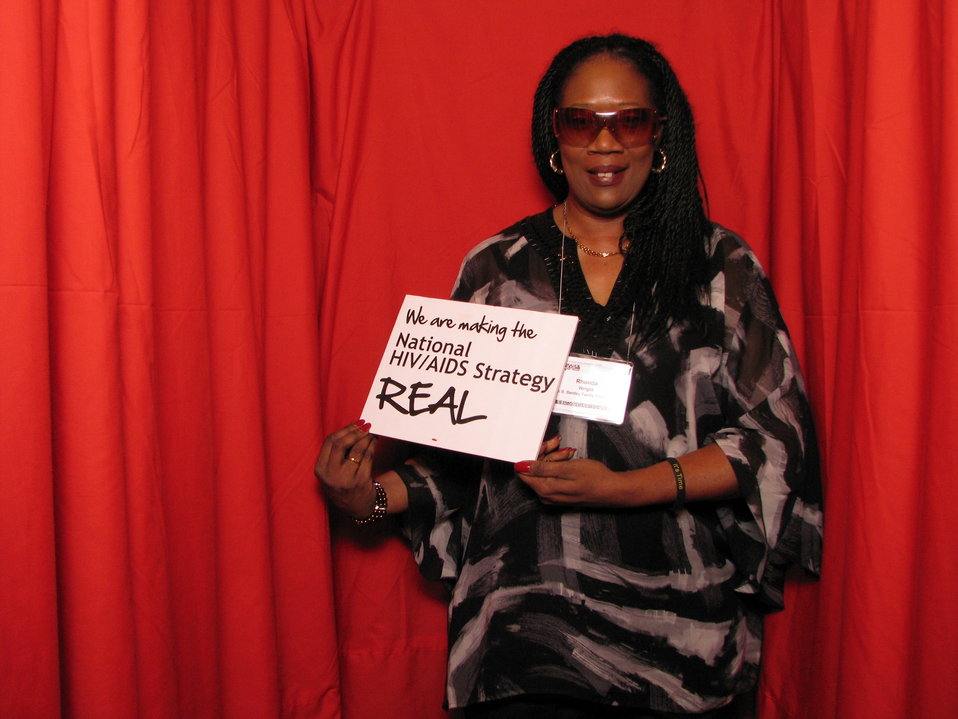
We are Making the National HIV/AIDS Strategy REAL

From the AIDS.gov photo booth at the U.S. Conference on AIDS, September 2010 (Orlando, FL).